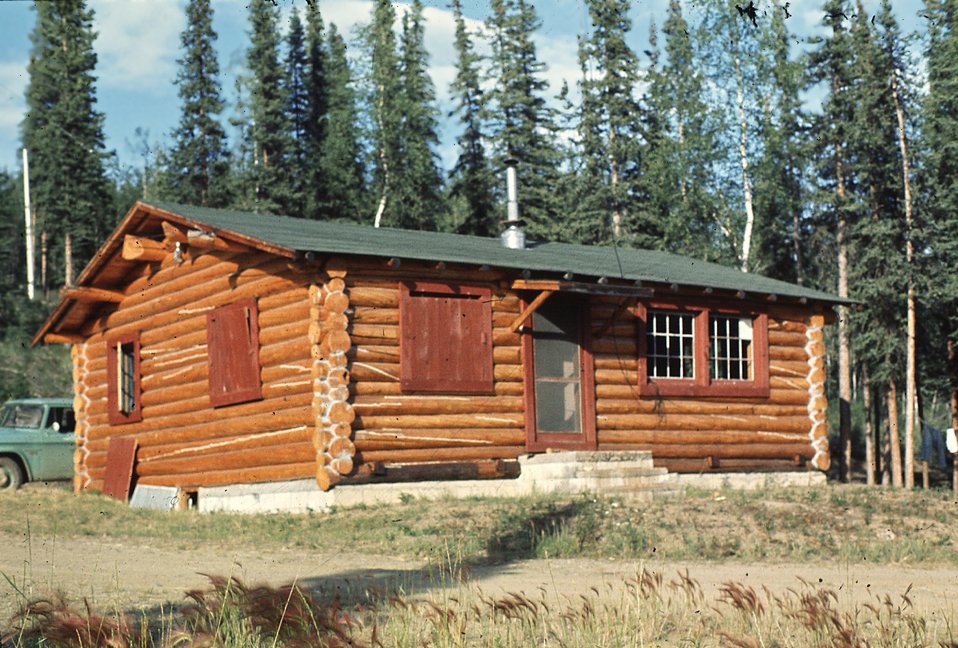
BLM Chicken Field Station